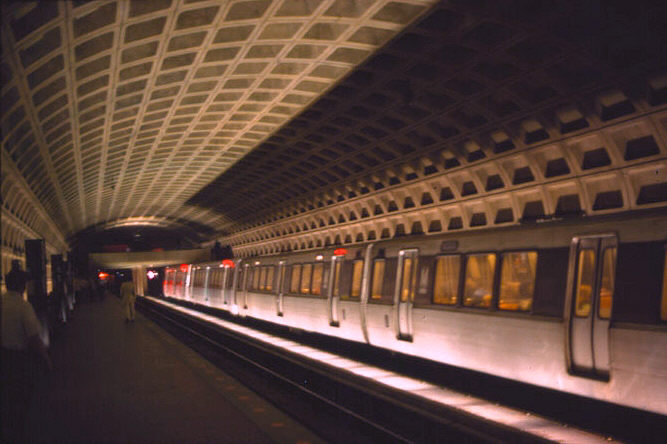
Metro platform and train. Washington, DC.